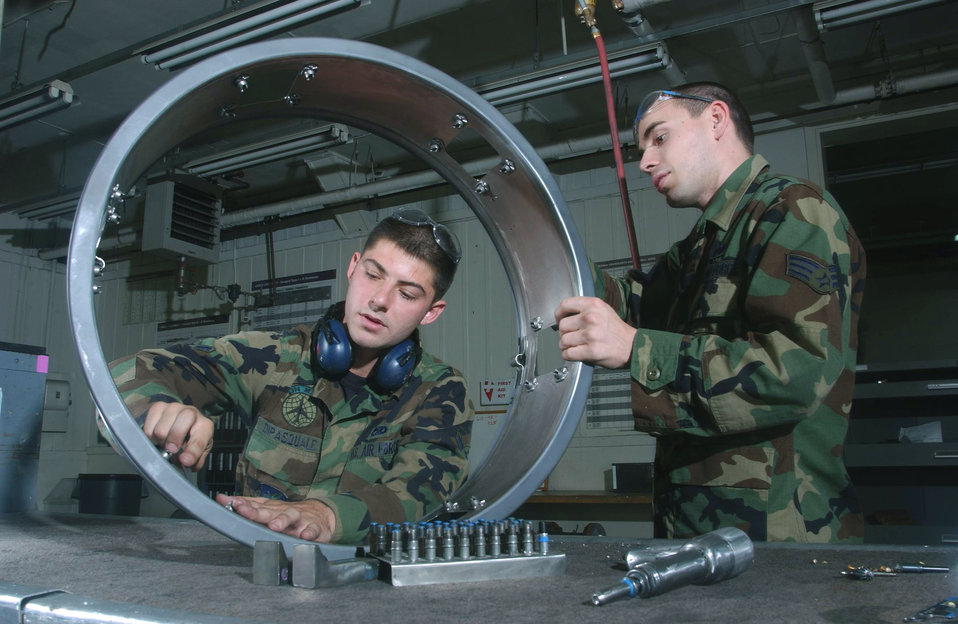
Routine maintenance

YOKOTA AIR BASE, Japan -- Airman Matthew DiPasquale (left) and Senior Airman Nicholas Humphrey replace the mounting bracket on a C-130 Hercules aircraft tire-seal assembly here during routine maintenance. Both airmen are assigned to the 374th Maintenance Group's aircraft structural maintenance element. The element is responsible for structural repair and corrosion prevention of assigned C-130 aircraft here and more than 200 transit planes that stop over yearly.